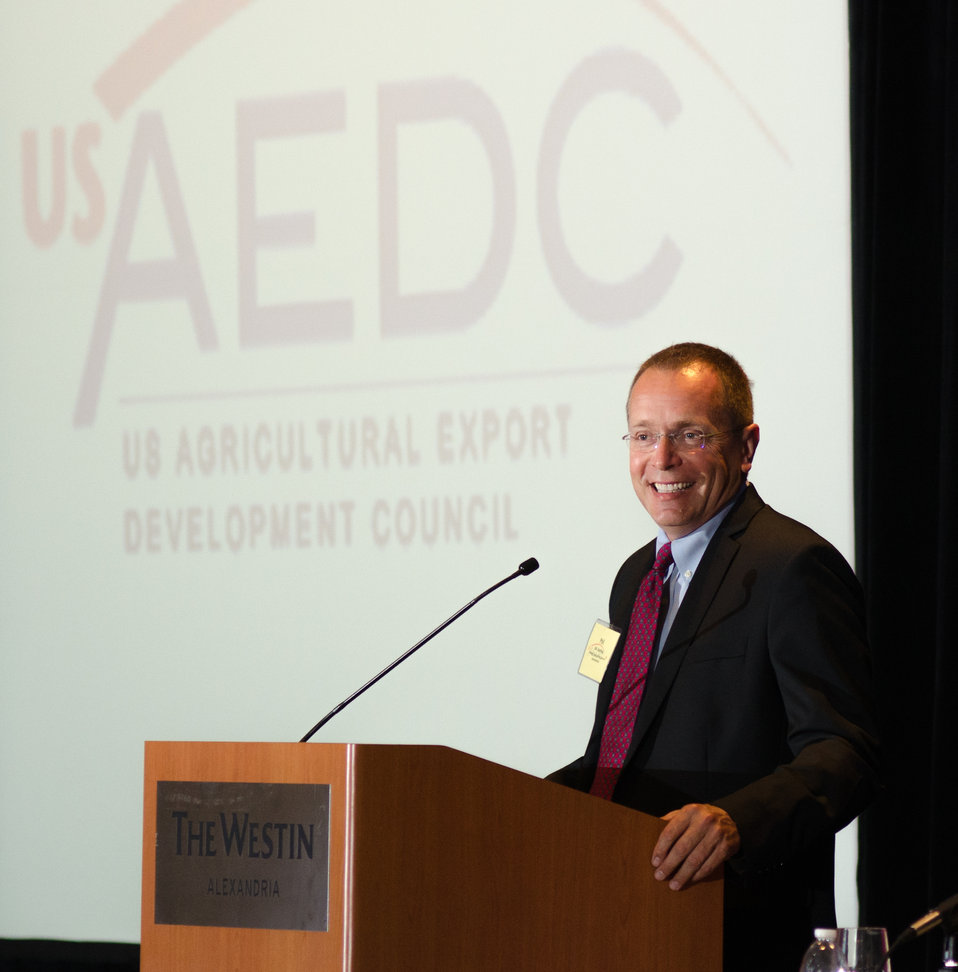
U.S. Department of Agriculture Foreign Agricultural Service Administrator Phil Karsting speaks at the U.S. Agricultural Export Development Council (USAEDC) Attaché Seminar, at the Westin Alexandria, in Alexandria, VA, on Wednesday, July 10, 2013. USAEDC is a non-profit private sector trade association that provides an exchange and coordination of information to promote the export of the products of U.S. agriculture. Their membership includes U.S. commodity trade associations, farmer cooperatives and state regional trade groups from around the country. In the interest of U.S. agricultural growers and producers their export promotion efforts, work in conjunction with the U.S. Department of Agriculture Foreign Agricultural Service.